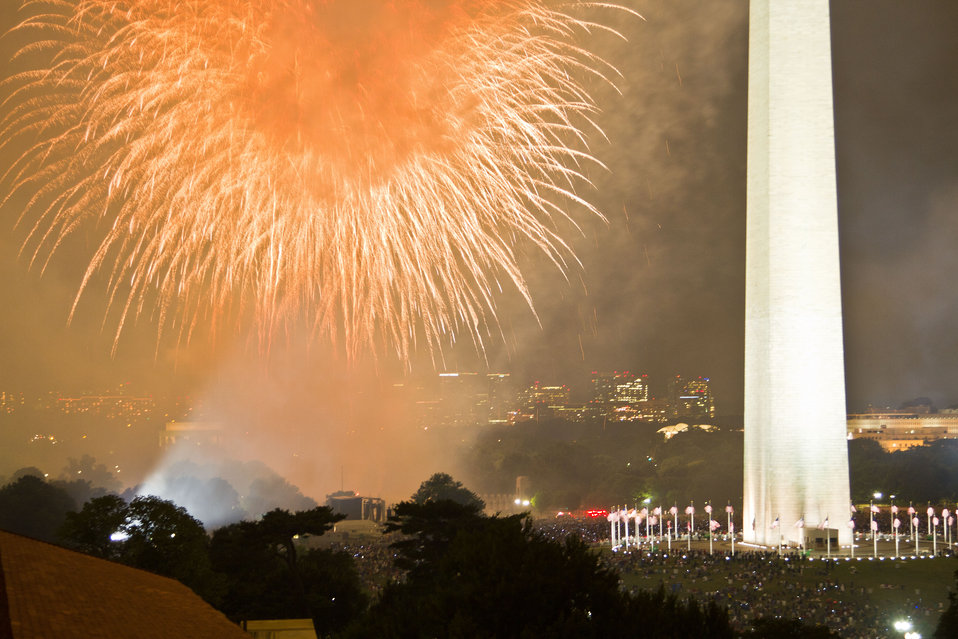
Independence Day fireworks at the National Mall, in Washington, DC, on Monday, July 4, 2011. USDA Media by Lance Cheung.